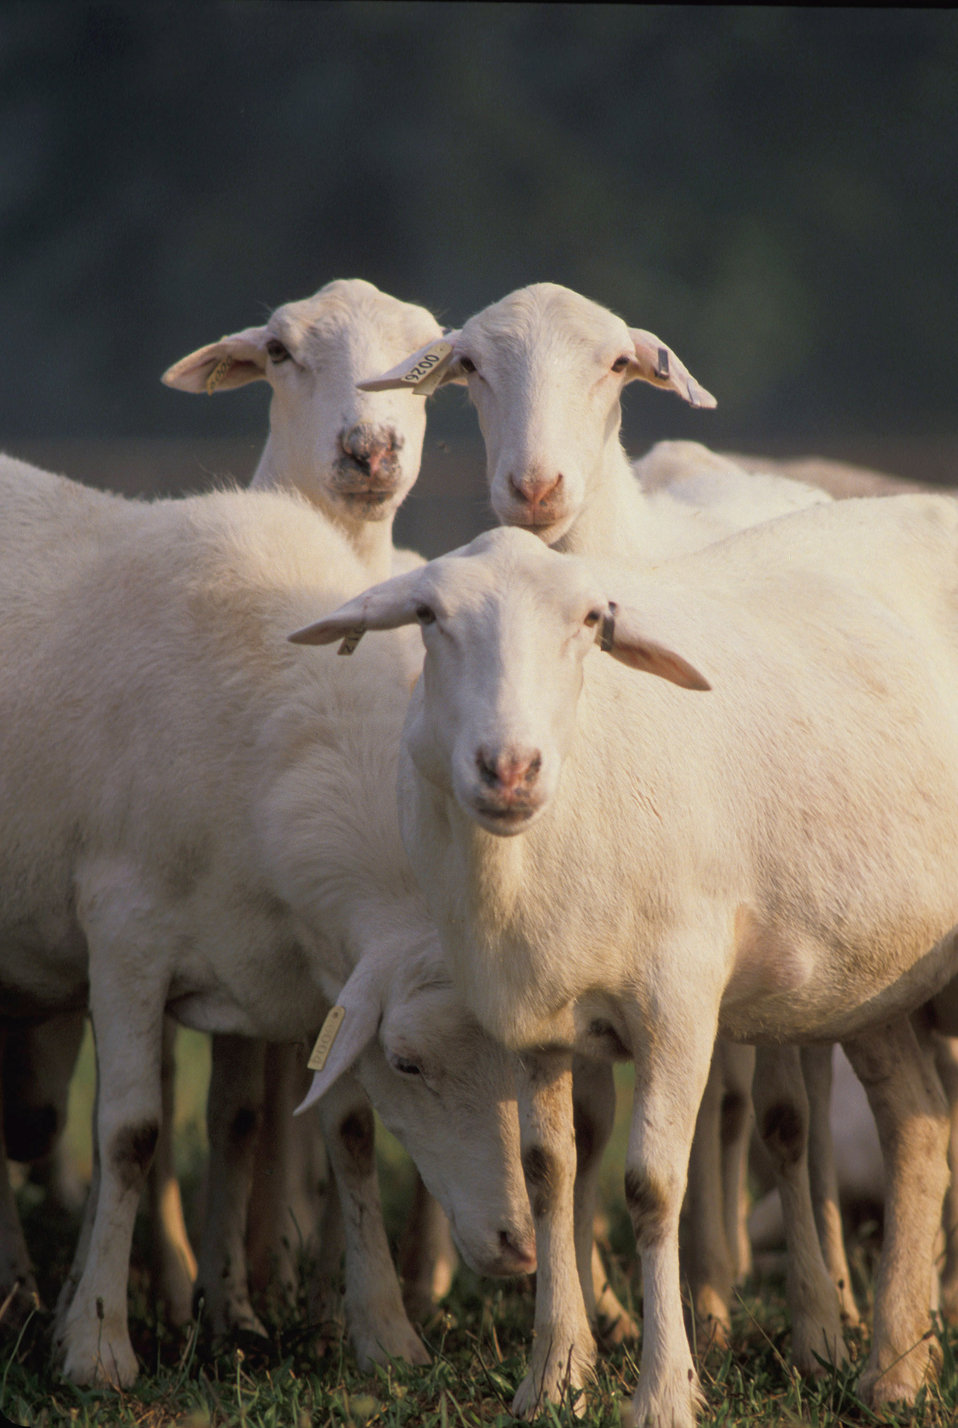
St. Croix sheep stand in a field on Sept. 21, 2005. This breed has shown resistance to parasites and tolerance to hot weather.